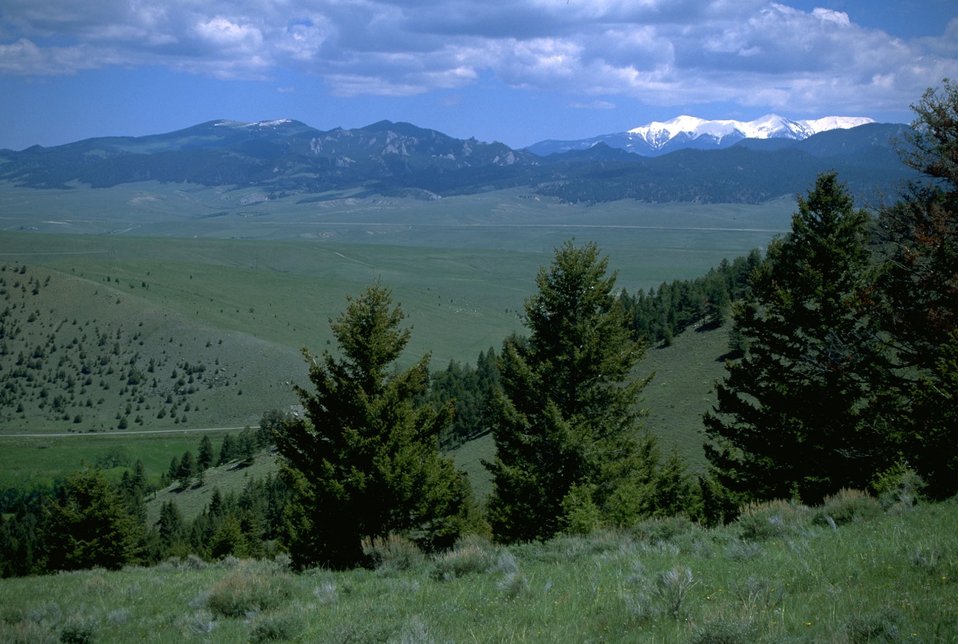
Green valley in the Humbug Spires Wilderness Study Area